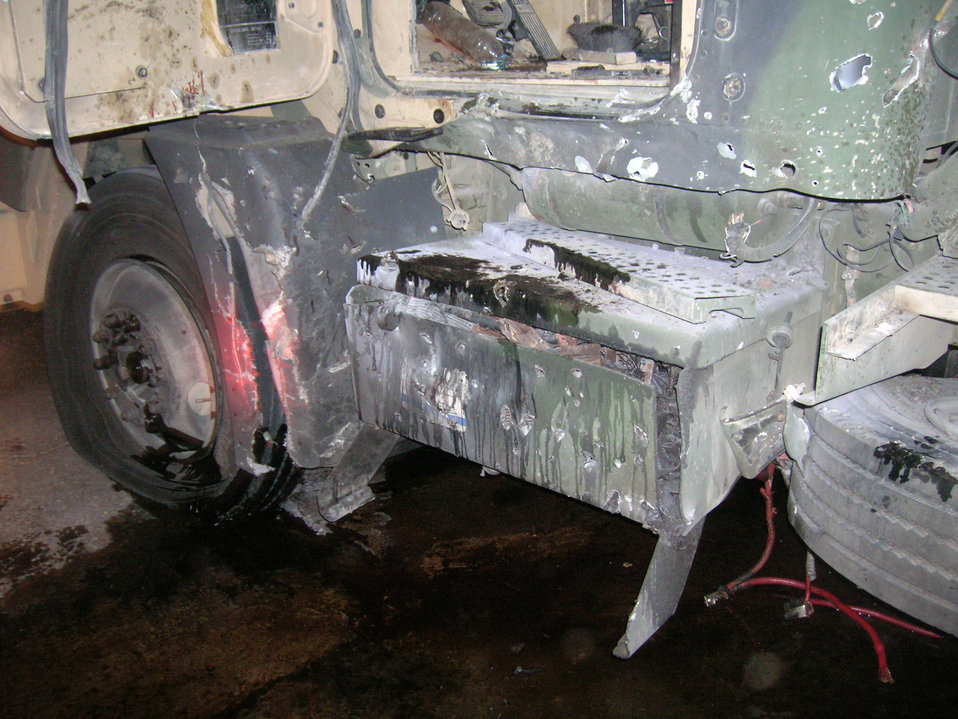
Life changes in a matter of seconds

The results of an improvised explosive device are shown on a truck driven by Airman 1st Class Joshua Collins on July 20. Airman Collins, assigned to the 70th Medium Truck Detachment, suffered shrapnel wounds to his left ankle. He was treated at the Air Force Theater Hospital at Balad Air Base, Iraq, and sent through the Contingency Aeromedical Staging Facility to Germany.